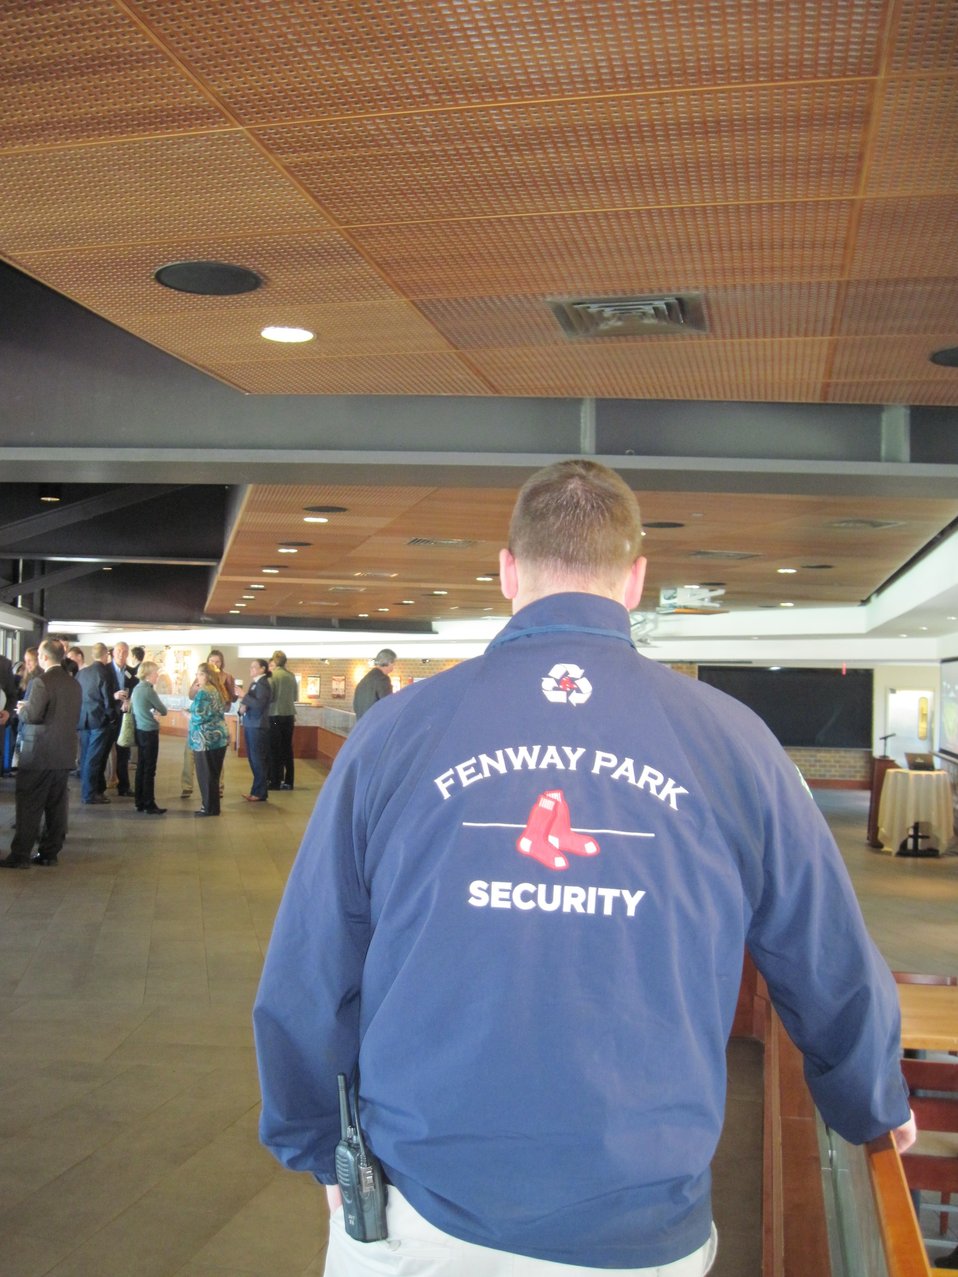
November 15, 2012 Fenway Walks the Walk

In celebration of America Recycles Day, November 15, the Massachusetts WasteWise Forum met at Fenway to discuss sustainability. There, EPA honored three new Food Recovery Challenge participants: Boston Red Sox, TD Garden, and the Colonnade Hotel.

These big venues can usually realize big savings and benefit the environment from sending their food waste to compost instead of landfills.

Check out EPA's Food Recovery Challenge